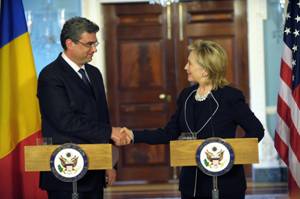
Secretary Clinton and Romanian Foreign Minister Teador Baconschi Shake Hands After Joint Press Availability

U.S. Secretary of State Hillary Rodham Clinton and Romanian Foreign Minister Teador Baconschi shake hands after their joint press availability and bilateral meeting at the U.S. Department of State in Washington, D.C., on June 1, 2010. [State Department/Public Domain]